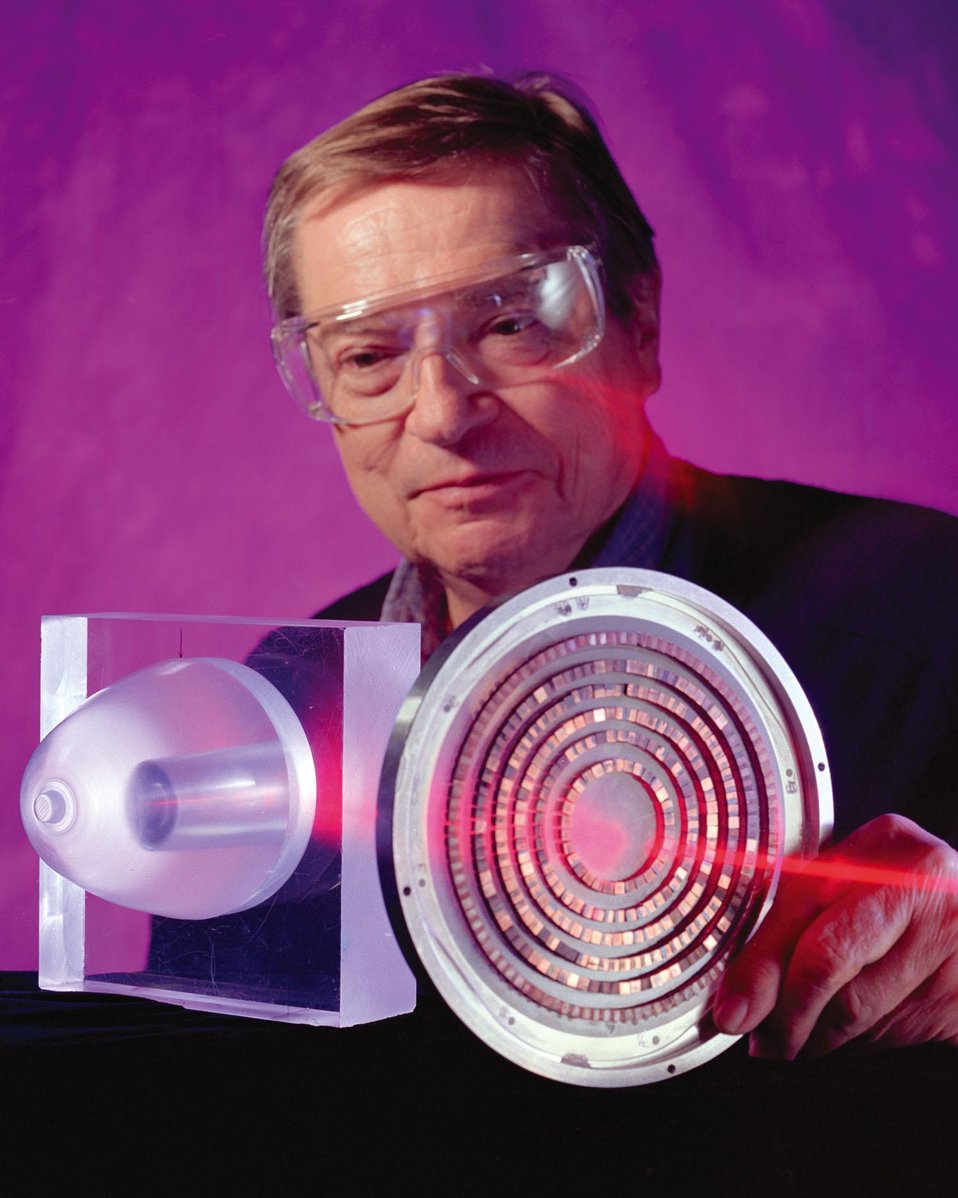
ANL PHYSICIST B. SMITHER DEVELOPED A GAMMA-RAY LENS FOR USE IN CANCER DETECTION.

THIS GAMMA-RAY LENS FOR CANCER DETECTION IS SO PRECISE THAT IT CAN DETECT TUMORS AS SMALL AS A GRAIN OF RICE. IT HAS BEEN SUGGESTED THAT THIS TECHNOLOGY COULD REPLACE MAMMOGRAPHY SINCE IT CAN LOCATE TINY TUMORS WITHOUT PATIENT DISCOMFORT.